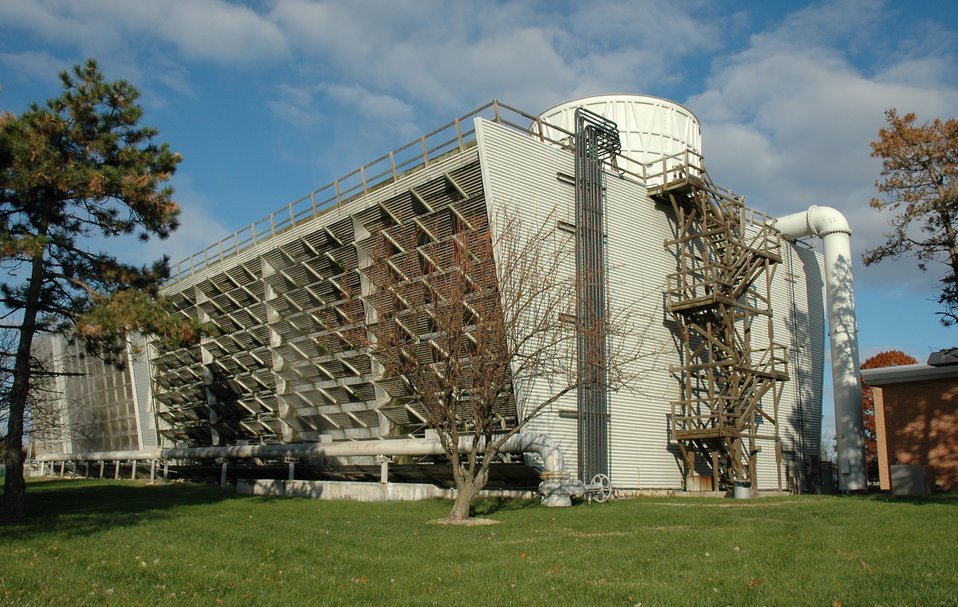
Efficiency of Commercial Air Conditioning

NIST laboratory experiments have demonstrated that adding small amount of additives to refrigerants may significantly improve the efficiency of commercial air conditioning.